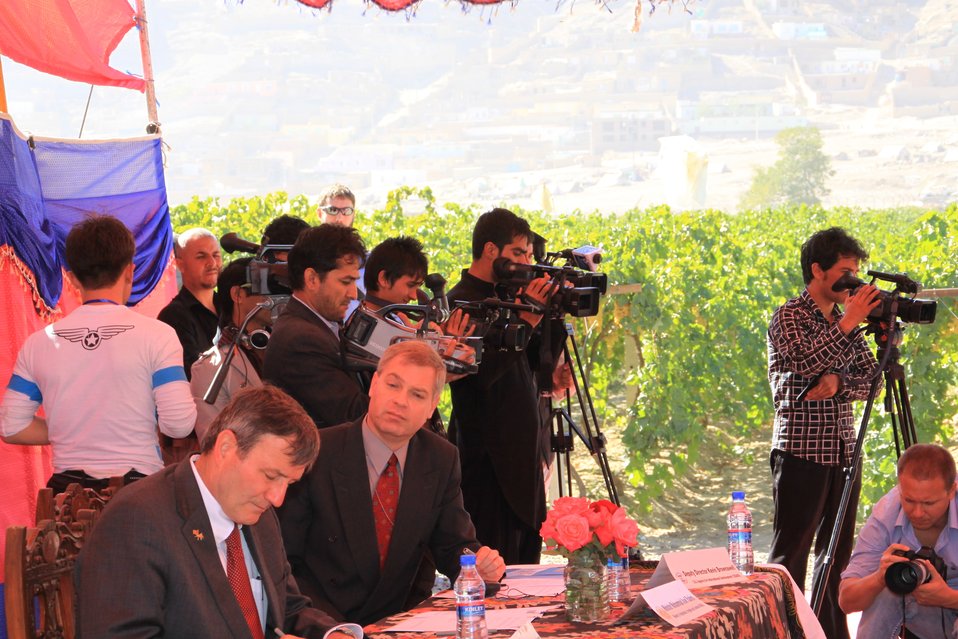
AVIPA Plus Wheat Seed Distribution 101005